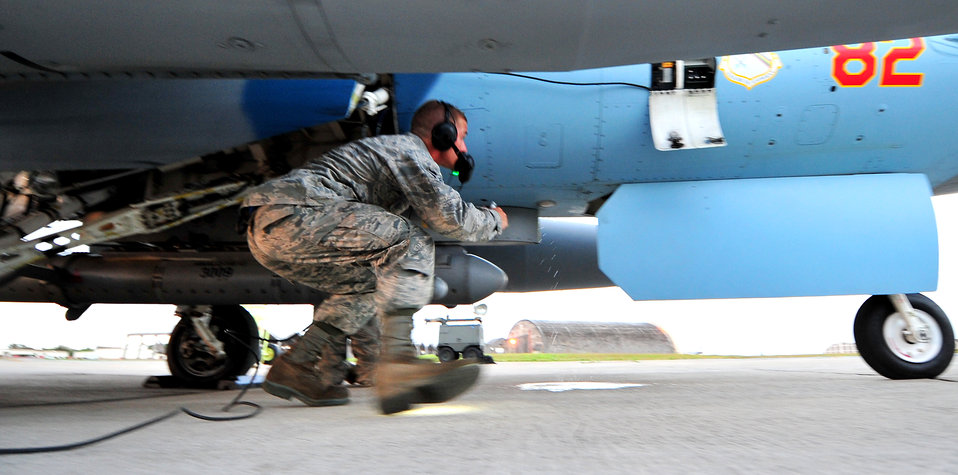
Joint Bilateral Training

Airman 1st Class Justin Hodge makes his final checks on an F-16 Fighting Falcon before a training mission Feb. 25, 2010, at Kadena Air Base, Japan. The aircraft is from the 18th Aggressor Squadron at Eielson Air Force Base, Alaska, and was participating in joint bilateral training with other U.S. forces and the Japan Air Self Defense Force from Feb. 22 to 26. Airman Hodge is from the 354th Aircraft Maintenance Squadron at Eielson AFB.